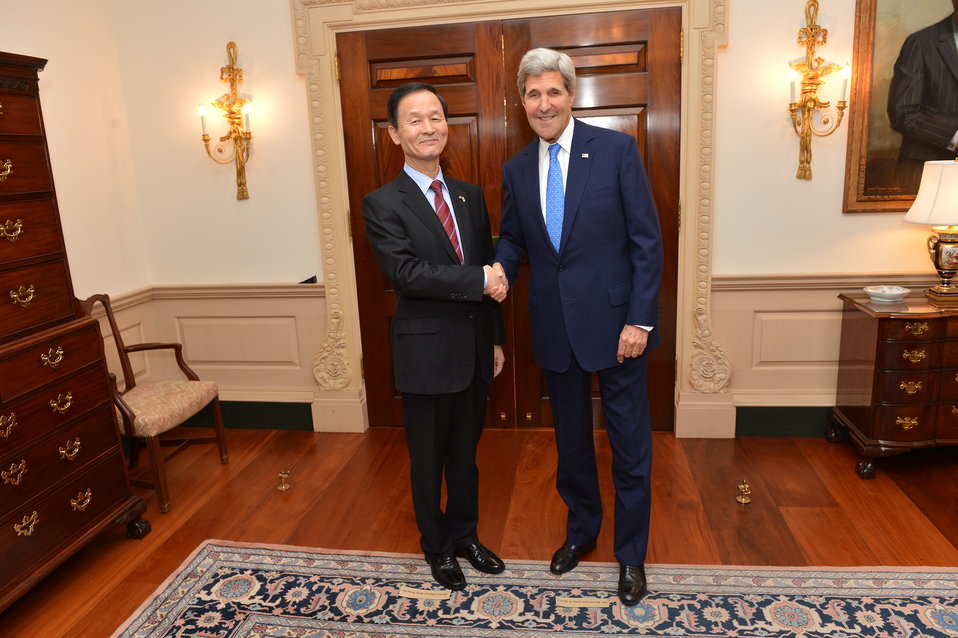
Secretary Kerry Shakes Hands With Republic of Korea Director of National Security Kim Jang-soo

U.S. Secretary of State John Kerry meets with Republic of Korea Director of National Security Kim Jang-soo at the U.S. Department of State in Washington, D.C., on October 25, 2013.